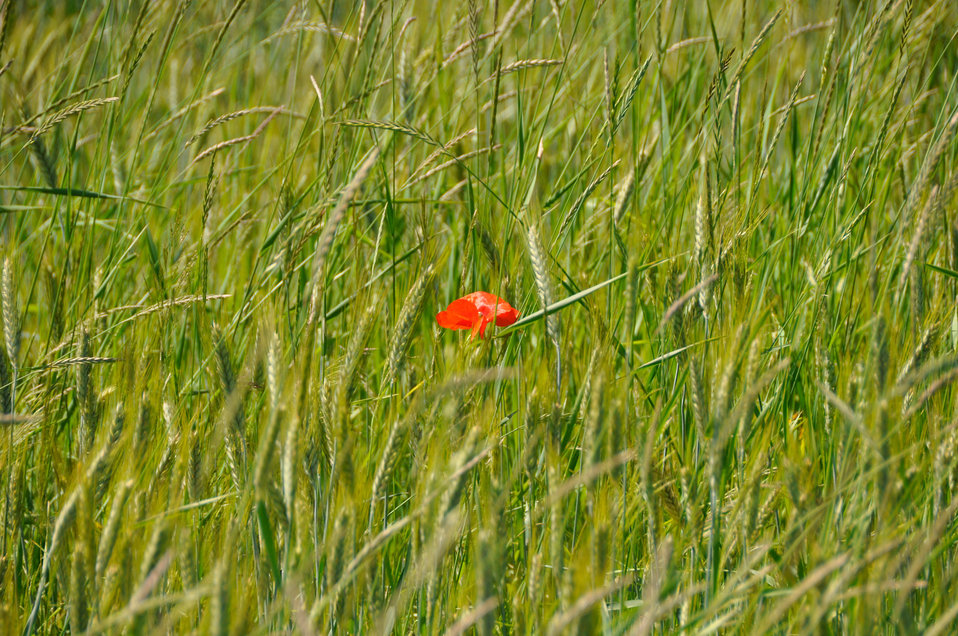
Poppy flower growing in a field of grain.